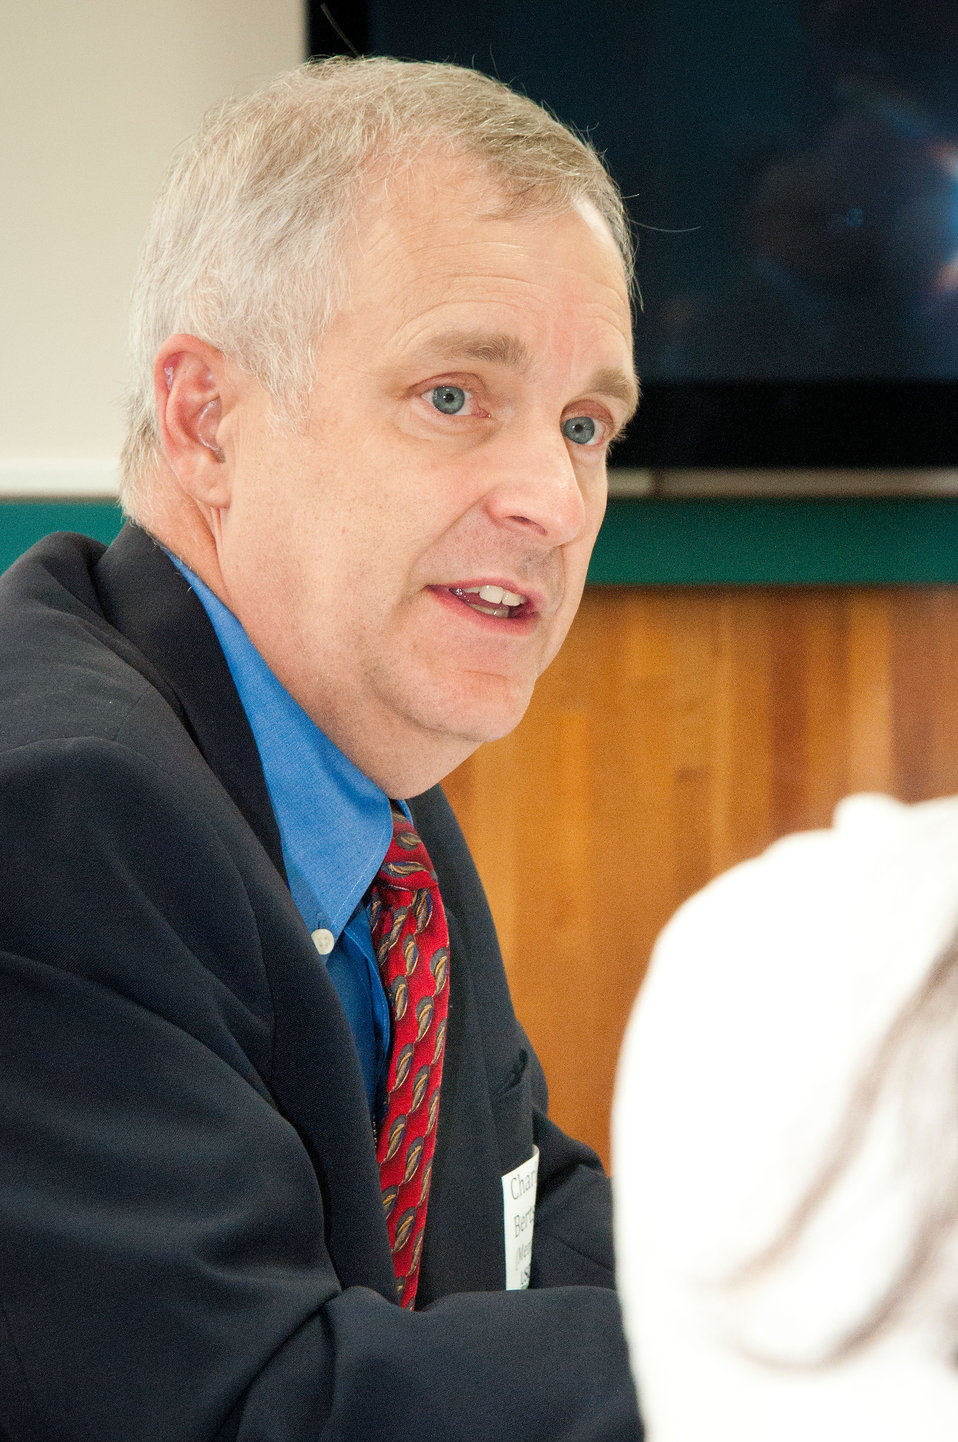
U.S. Department of Agriculture (USDA) Foreign Agricultural Service (FAS) and mentor Charles Bertsch listens to responses about workplace “Work/Life Balance” from employees attending the USDA ‘s Office of Human Resources Management (OHRM) Virtual University’s Fall Flash Mentoring Event at USDA in Washington, D.C. on Thursday, Sept. 6, 2012.